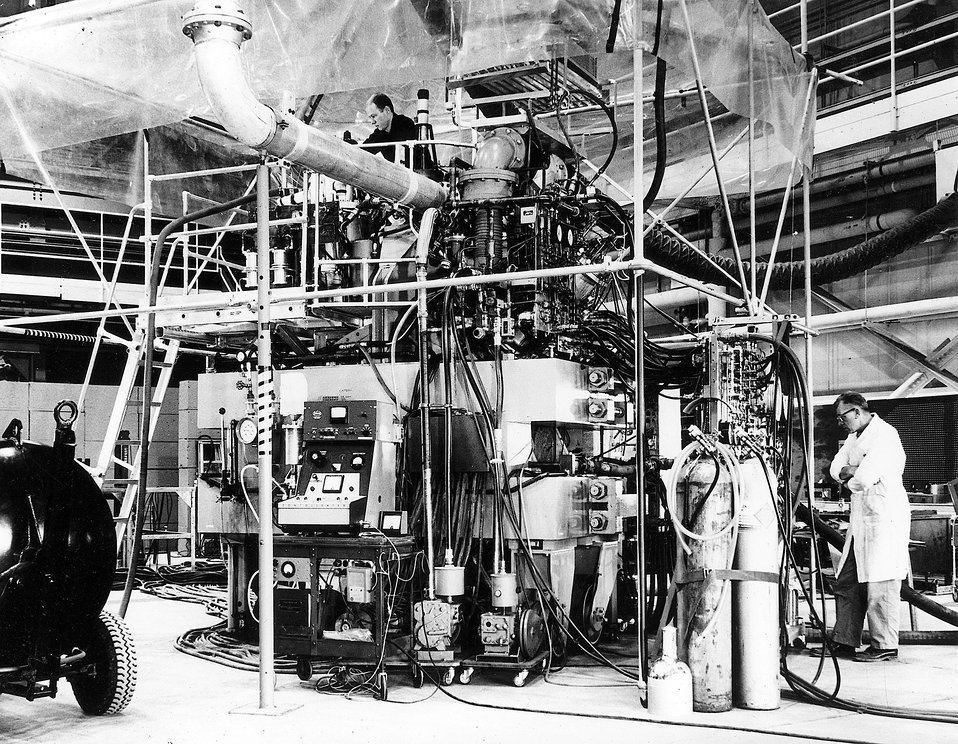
The 20-inch bubble chamber used with the Cosmotron at Brookhaven National Laboratory. c. 1961